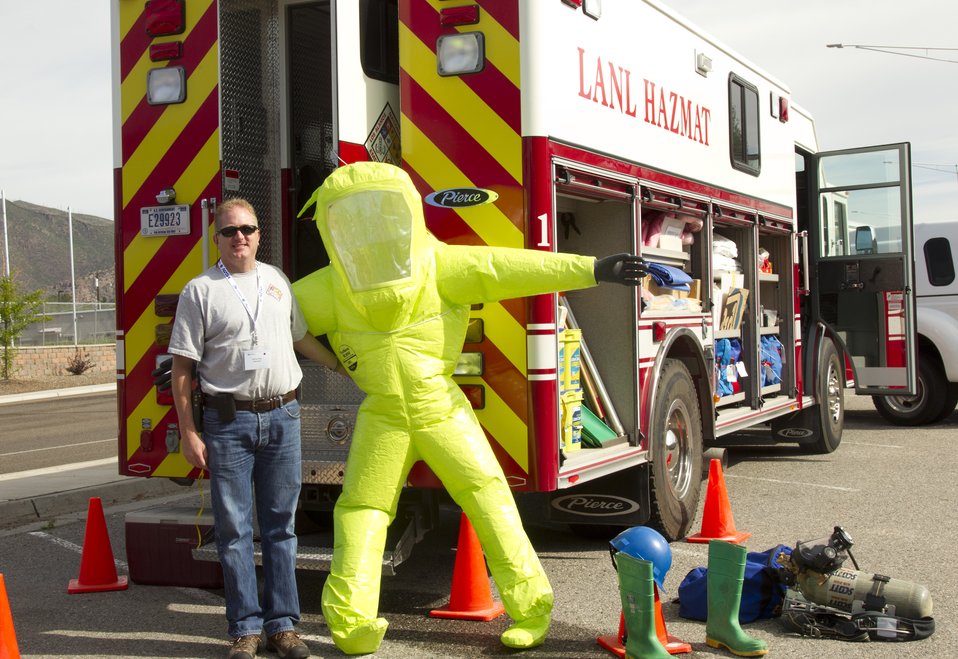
DURING THE EMPLOYEE FAMILY CELEBRATION AT LOS ALAMOS NATIONAL LABORATORY, HAD SOME IF IT'S EMERGENCY VEHICLES AND GEAR ON DISPLAY.